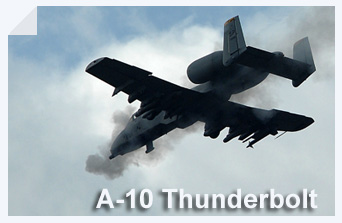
A-10 Thunderbolt

The A-10 Thunderbolt II has excellent maneuverability at low air speeds and altitude, and is an highly accurate weapons-delivery platform.